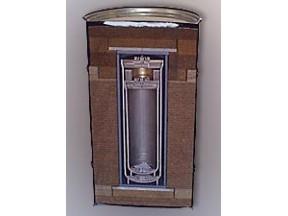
Savannah River National Laboratory

The Savannah River National Laboratory (SRNL), located in South Carolina, has done a lot to improve hazardous radioactive materials packaging design, evaluation, and regulatory certification procedures that support the requirements of DOE, the Department of Transportation, the U.S. Nuclear Regulatory Commission, and the International Atomic Energy Agency. SRNL’s work on issues such as gas generation during shipping/storage, compatibility of containment materials, and methods for long-term monitoring have resulted in the development of new packaging designs for the transportation and storage of radioactive materials.